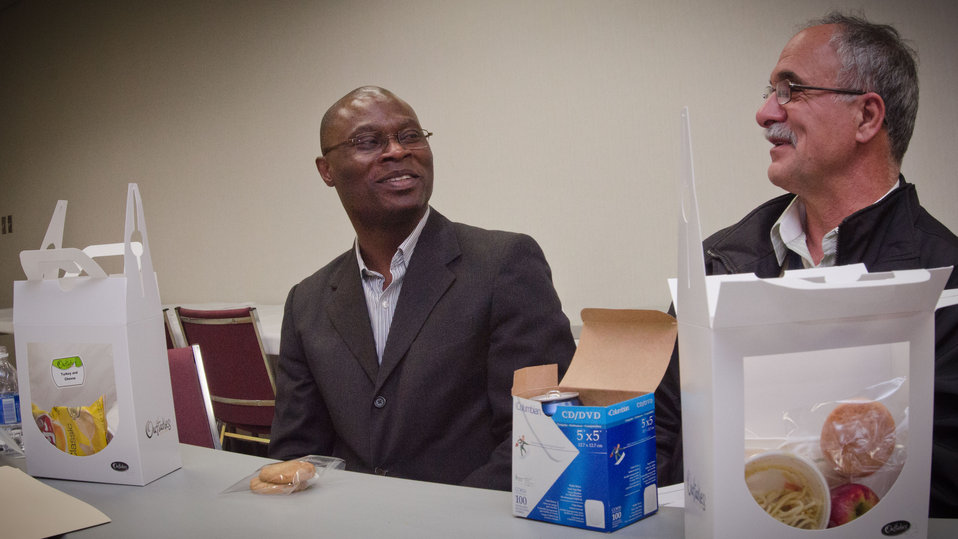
Farmers and staffers were able to network during lunchtime at the “Virginia State University (VSU), U.S. Department of Agriculture (USDA) and Virginia Farmers Working Together” outreach workshop in the VSU L. Douglas Wilder building on Thursday, March 7, 2013, in Petersburg, VA. Farmers shared and learned new ways to do more with their current assets and capabilities, and ways to grow their businesses.